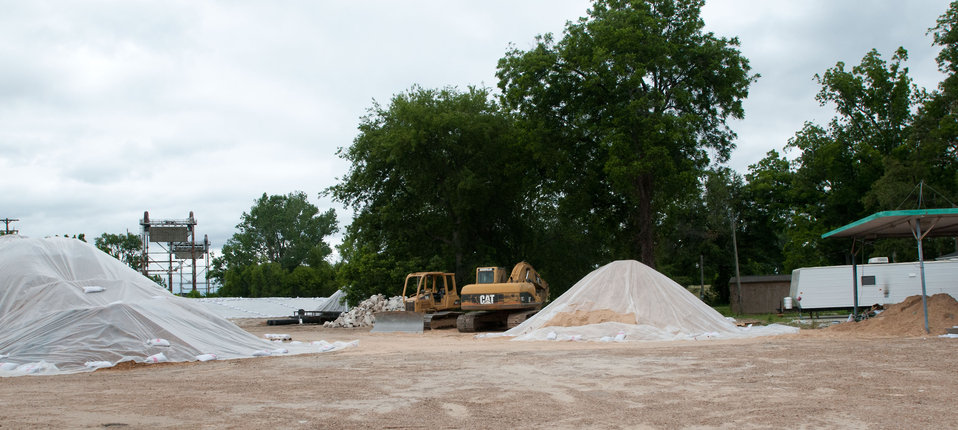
The Yazoo Mississippi Levee Board of Clarksville took emergency action more than two weeks ago by filling this roadway /bridge access across a waterway that flows through Satartia, MS, on Monday, May 16. 2011. The action was taken in preparation of the rising flood waters.